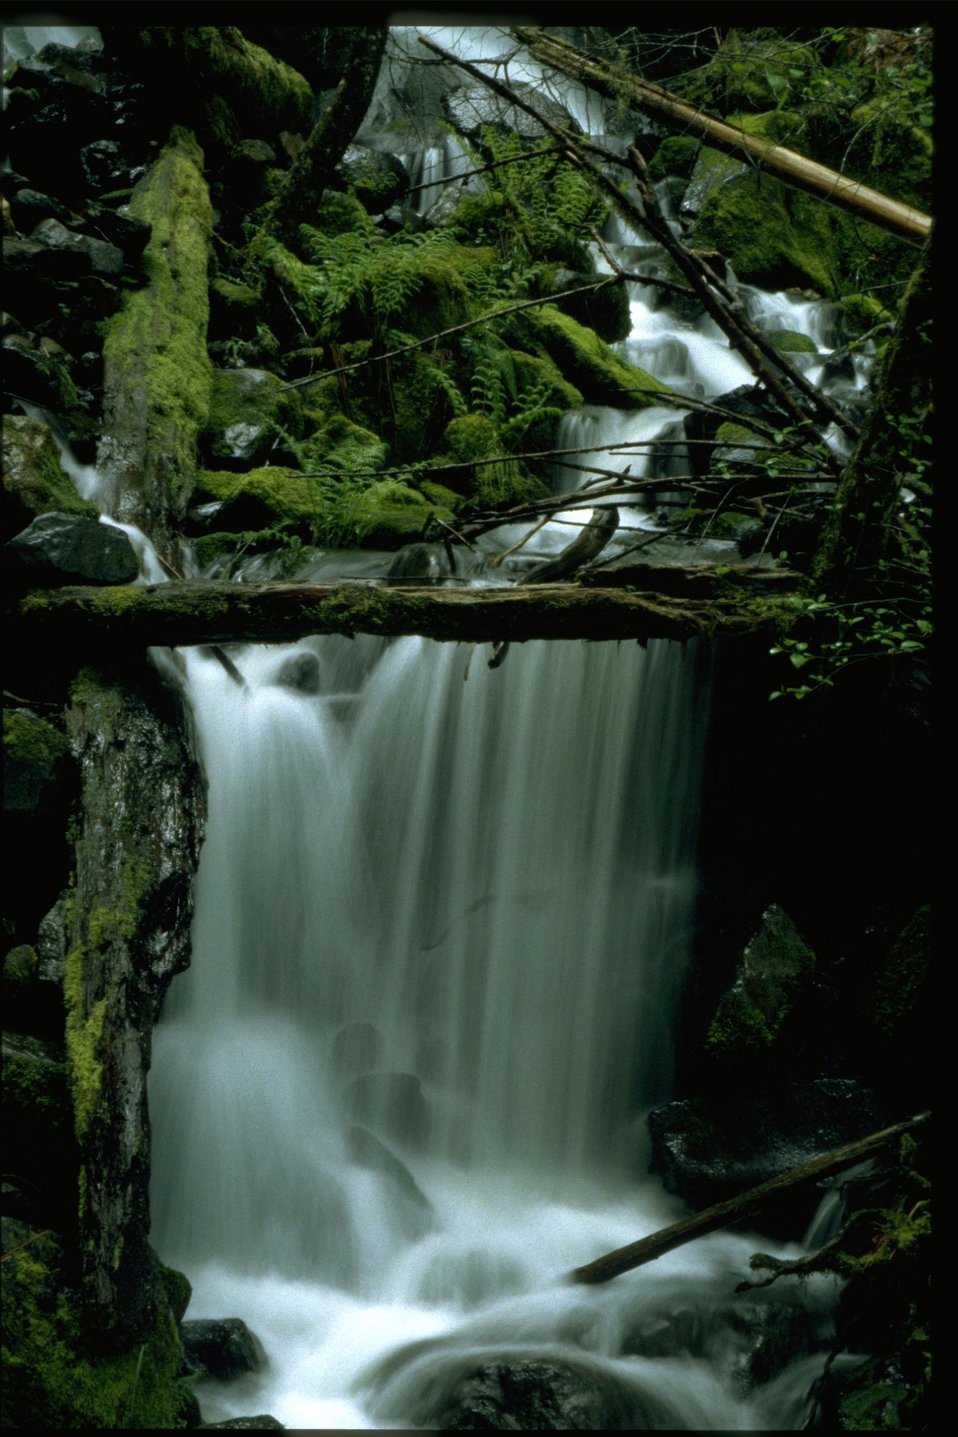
Swiftwater stream.